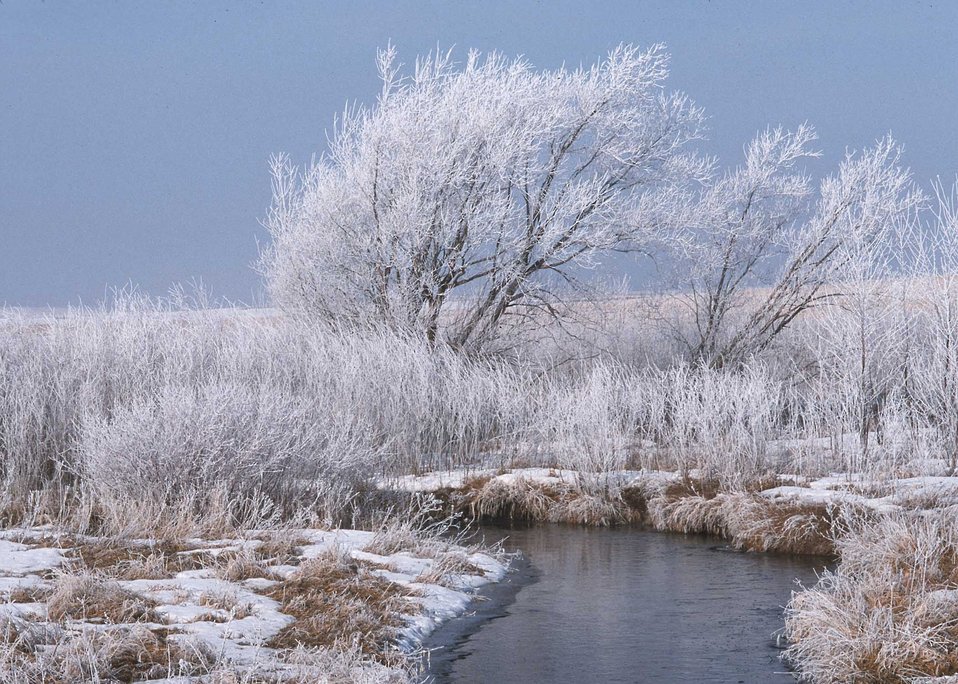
A winter landscape

Frost and ice form a beautiful snowscape in a conservation buffer along Bear Creek in central Iowa, in Story County.